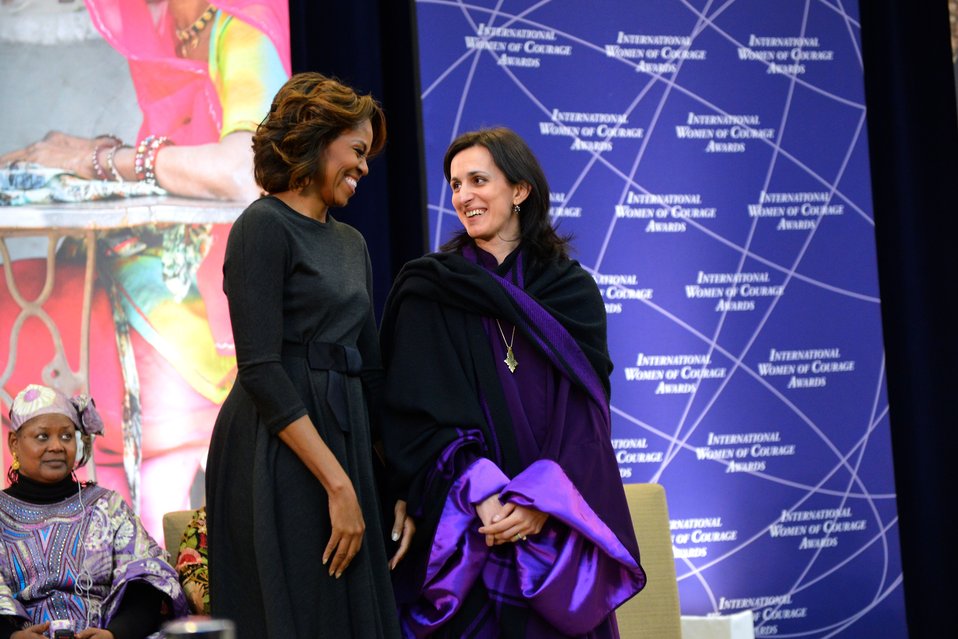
First Lady Michelle Obama Honors 2014 IWOC Awardee Rusudan Gotsiridze of Georgia

First Lady Michelle Obama honors 2014 International Women of Courage Awardee Rusudan Gotsiridze, Bishop of the Evangelical Baptist Church of Georgia, at the 2014 Secretary of State’s International Women of Courage Award Ceremony at the U.S. Department of State in Washington, D.C., on March 4, 2014.